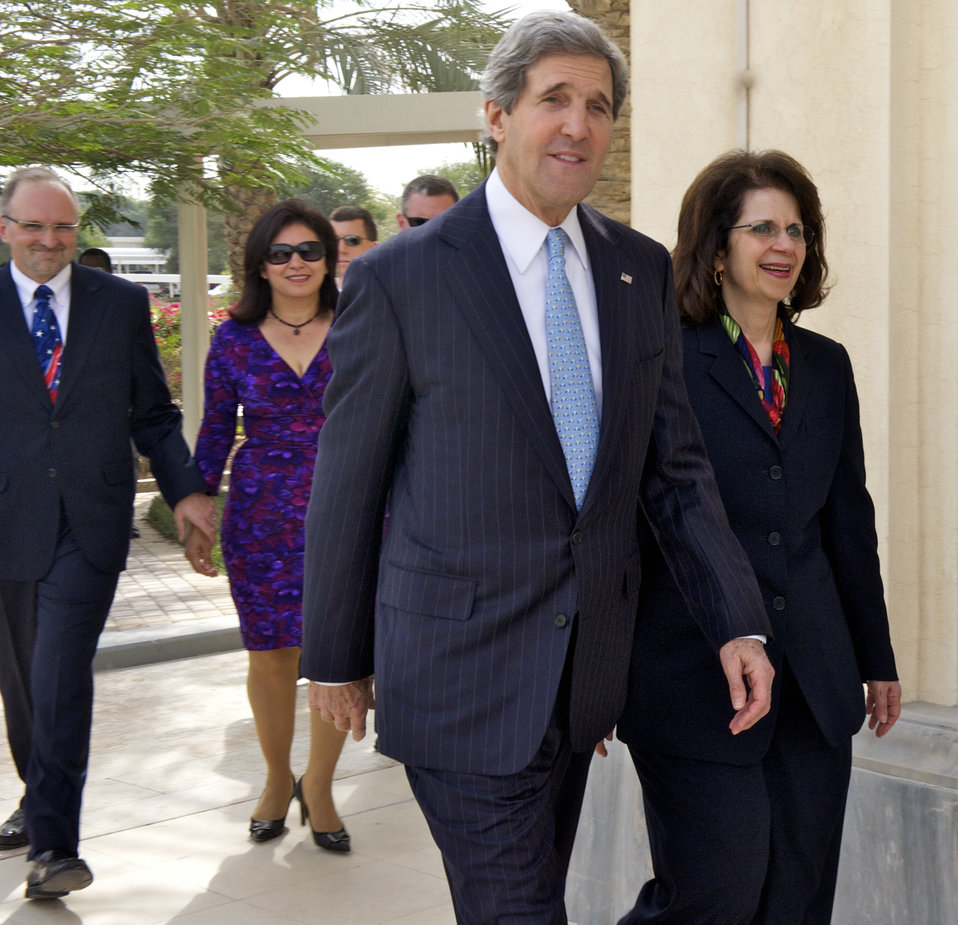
Secretary Kerry With Ambassador Ziadeh, Deputy Chief of Mission McCary, and Mrs. McCary

U.S. Secretary of State John Kerry walks with U.S. Ambassador to Qatar Susan Ziadeh, right, Deputy Chief of Mission Ian McCary, far left, and Mrs. McCary, second to left, to speak with the staff and families of the U.S. Embassy in Doha, Qatar, on March 6, 2013.